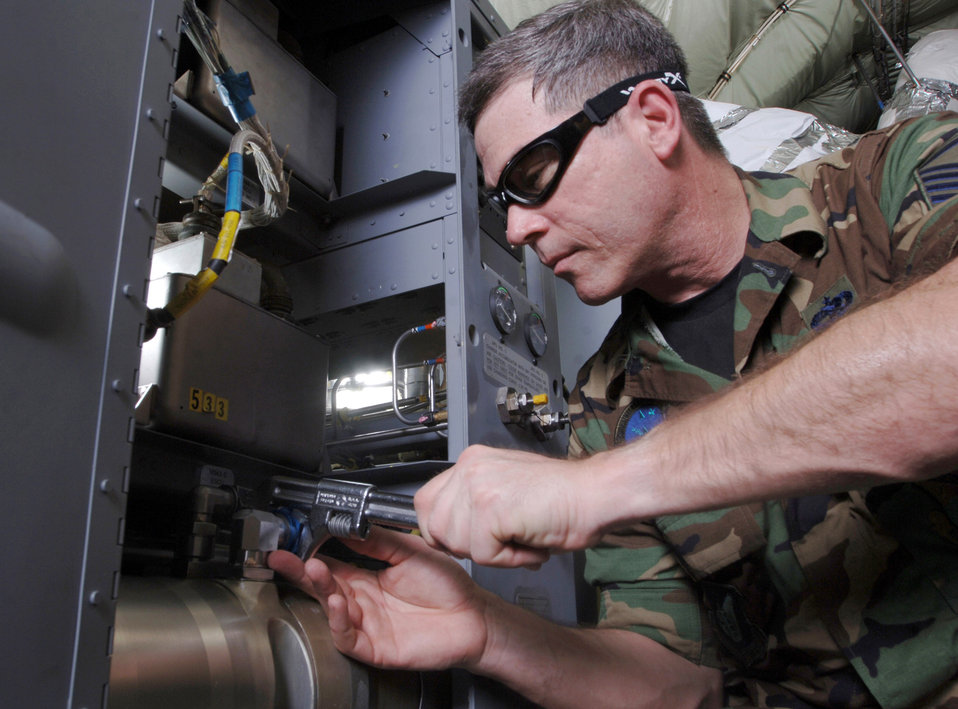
Alaska Airmen work at Guam

ANDERSEN AIR FORCE BASE, Guam (AFPN) -- Master Sgt. Jerry Boynton uses a wrench to remove a line on an auxilliary power unit inside a KC-135 Stratotanker. Sergeant Williams is a hydraulic technician with the 168th Air Refueling Wing of the Alaska Air National Guard at Eielson Air Force Base.